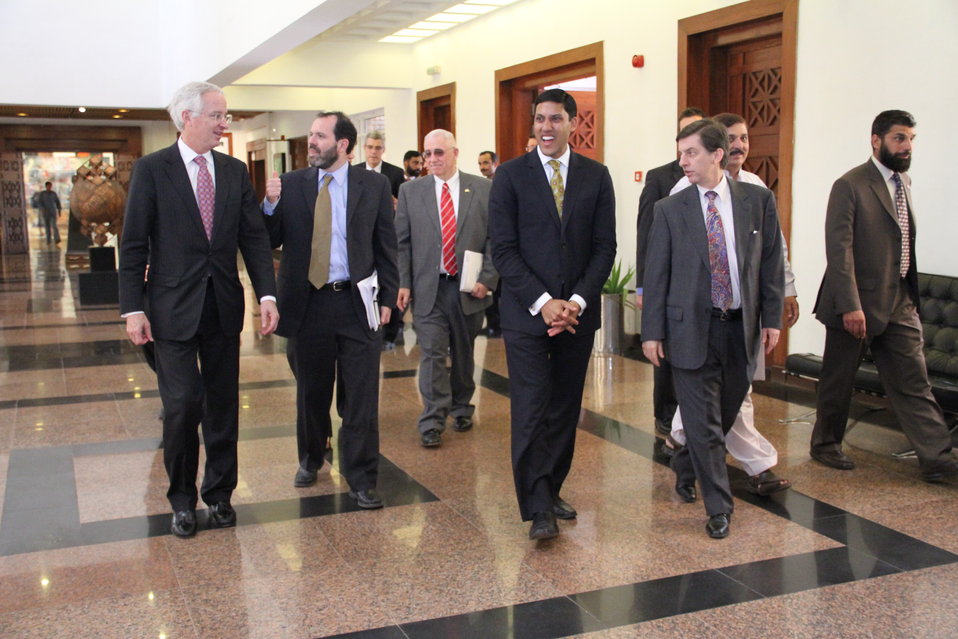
Photo Exhibition Celebrate US-PAK Cooperation at PNCA, Islamabad on April 13, 2012

US Ambassador Cameron Munter, Dr. Rajiv Shah with the US officials on Photo Exhibition.